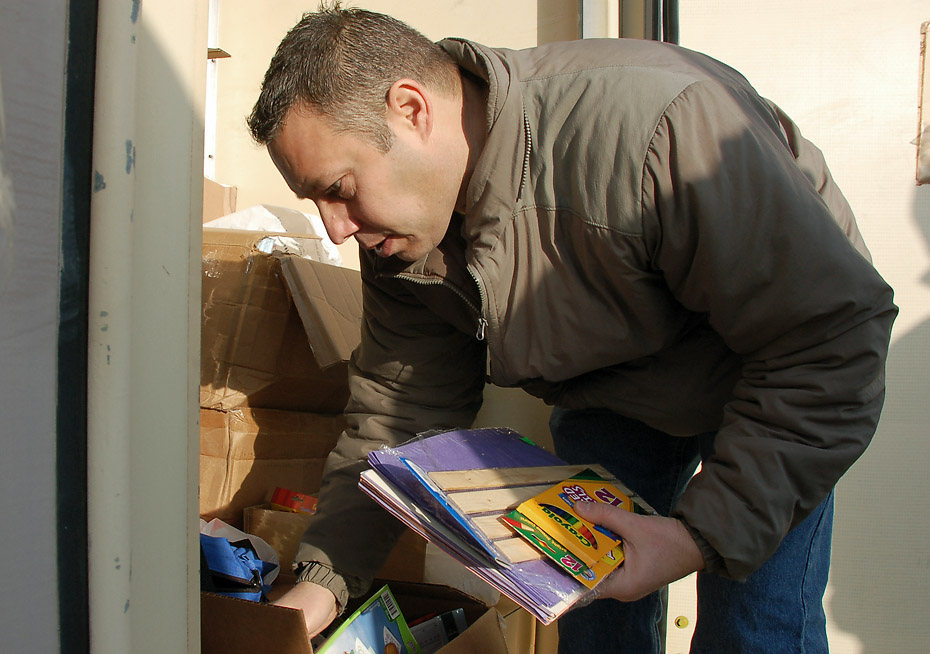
Manas Airmen tend to children's cancer center needs

Tech. Sgt. Thomas Pettit picks out some arts and crafts gifts to take to Kyrgyzstan's sole Children's Cancer Hospital. Sergeant Pettit spent some of his off-duty time with others from Manas Air Base, Kyrgyzstan, who volunteered to assist at the hospital. Sergeant Pettit is assigned to the 376th Expeditionary Medical Group and is deployed from Beale Air Force Base, Calif. He is originally from Fort Wayne, Ind.